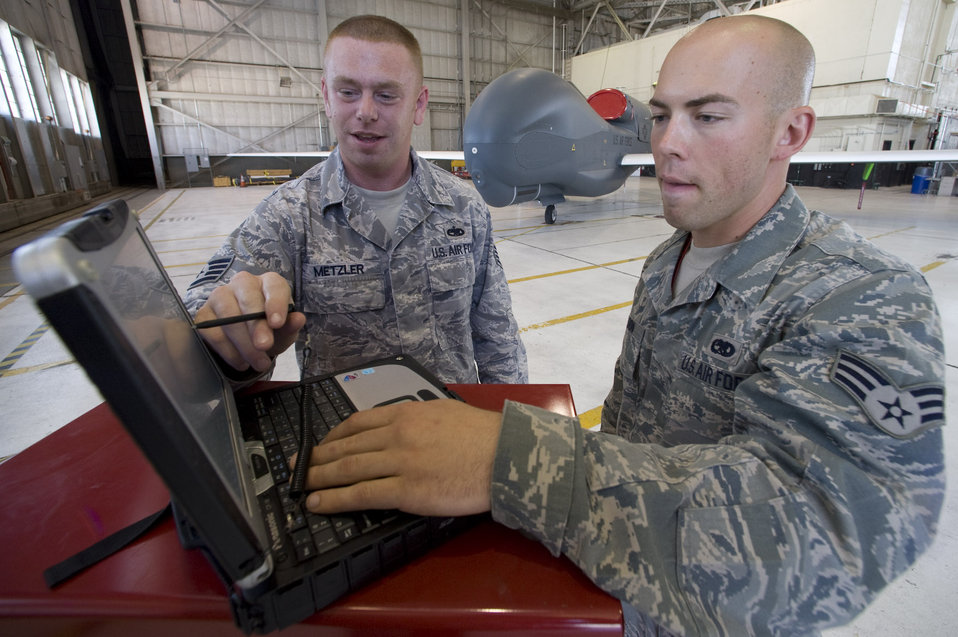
UAS Warriors

Staff Sgt. Nathaniel Metzler (left) and Senior Airman Aaron Weldon, both assigned to the 31st Test and Evaluation Squadron at Edwards Air Force Base, Calif., review a technical order for the Global Hawk aircraft. Computerized TOs provide the information required for maintenance on the aircraft and replace bulky, multi-volume books. Sergeant Metzler is a crew chief and Airman Weldon is an electrical and environmental journeyman on the Global Hawk.